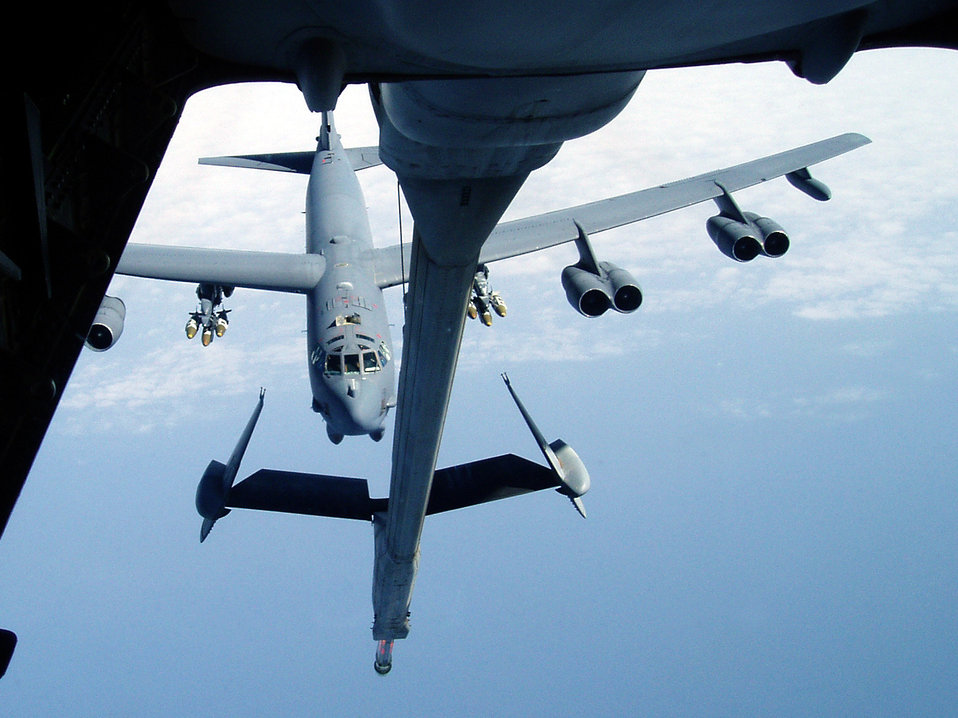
Thirsty Buff

OPERATION ENDURING FREEDOM -- A KC-10A Extender with the 380th Air Expeditionary Wing lowers its flying boom to provide fuel to an approaching B-52H Stratofortress over Southwest Asia. Redmond Raux)